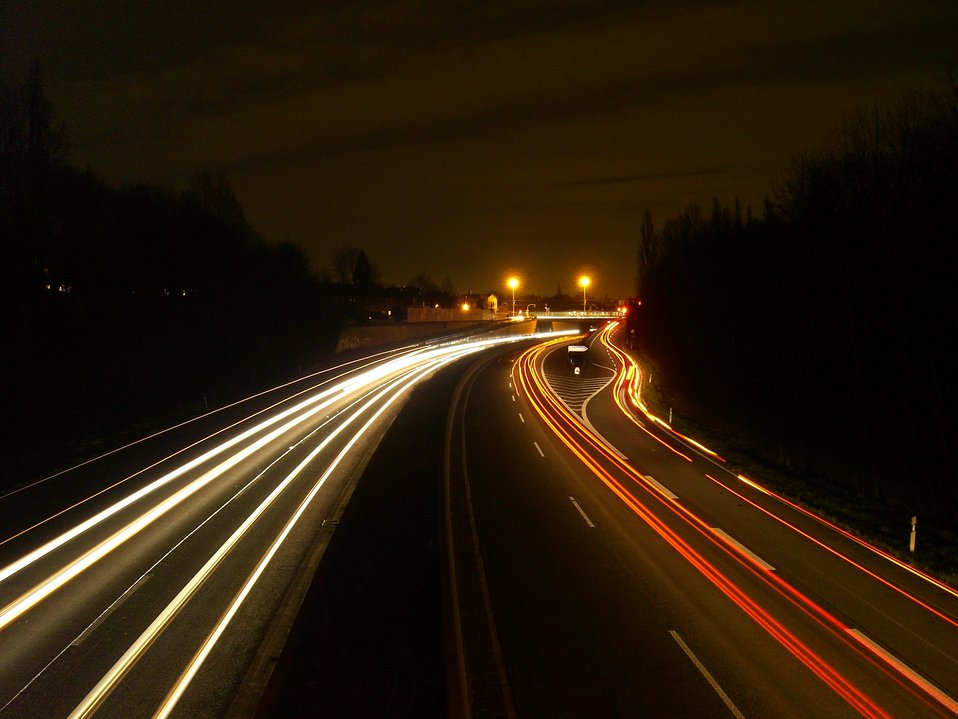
Deutsch: BAB 40 in Styrum bei Nacht